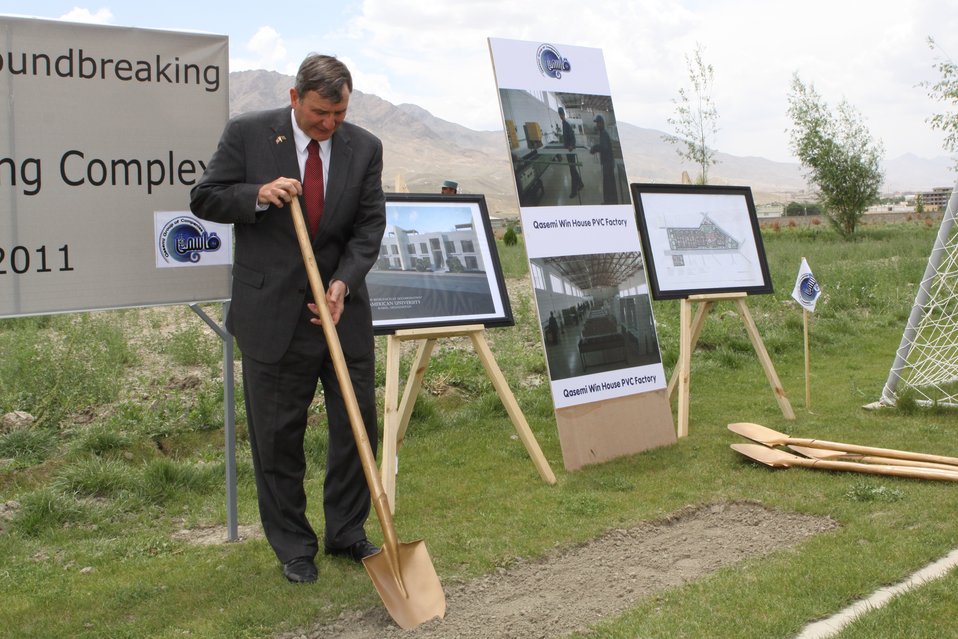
100526 AUAF Graduation 400